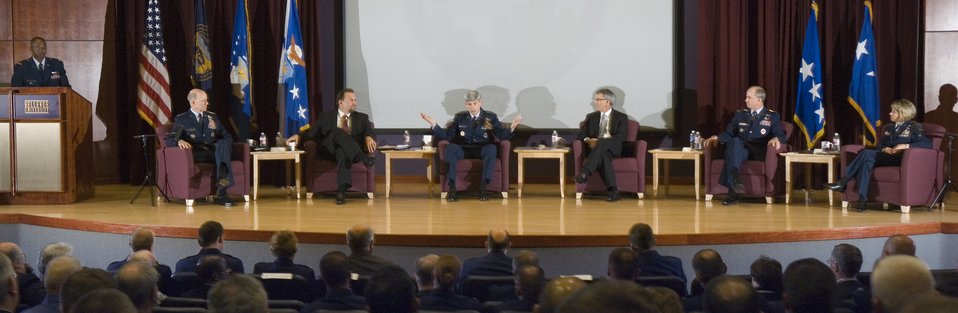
Gen. Schwartz outlines vision in speech to Omaha leaders

Lt. Col. Joe Sanders (from left to right), Gen. John D.W. Corley, Derrick J. Leathers, Gen. Norton A. Schwartz, Wayne Sensor, Gen. Kevin P. Chilton and Lt. Gen. Terry L. Gabreski answer questions during the Executive Leadership Forum Aug. 15 at Bellevue University in Nebraska during Air Force Week in the Heartland. Colonel Sanders was the forum facilitator, General Corley is the commander of Air Combat Command, General Schwartz is the Air Force chief of staff, General Chilton is the commander of U.S. Strategic Command, and General Gabreski is the vice commander of Air Force Materiel Command. Mr. Leathers and Mr. Sensor are community leaders from the Heartland region.